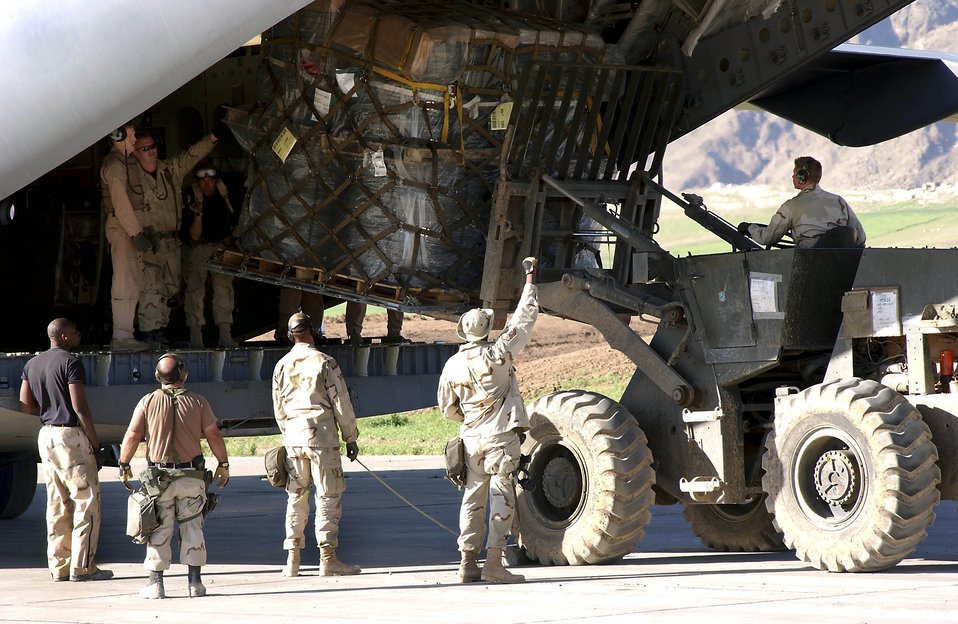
Offloading

OPERATION IRAQI FREEDOM -- Members of the 86th Air Mobility Squadron rush in to offload a C-17 Globemaster III at Bashur Air Base, Iraq. The airmen are offloading aircraft in record time and, as of April 14, had offloaded more than 220 aircraft with more than 13 million pound of cargo. The heavy aircraft loads have caused the base runway to crack.